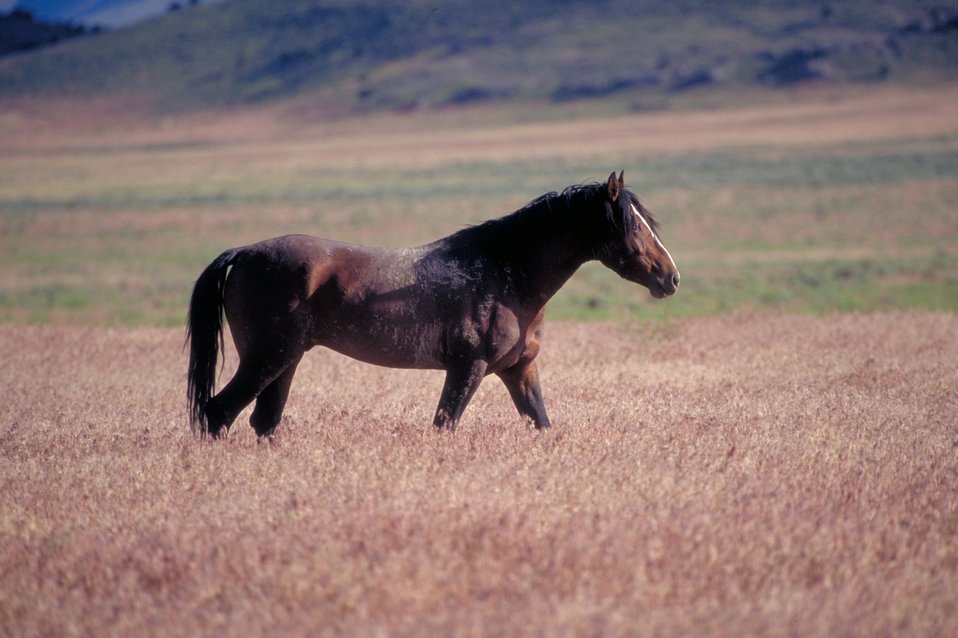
Onaqui Herd near Dugway, Utah.